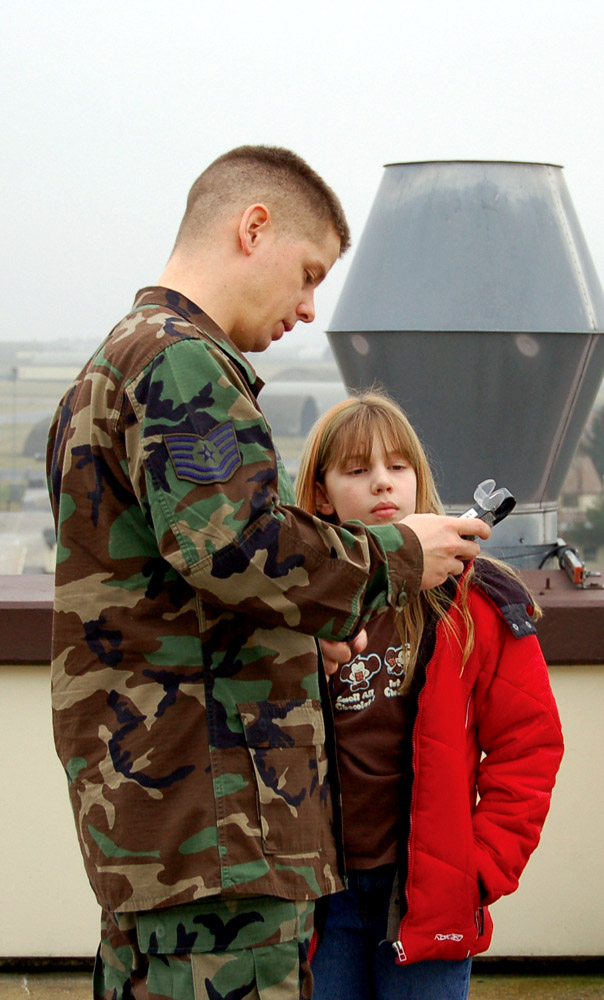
National Job Shadow Day

Tech. Sgt. Donald Odom explains to his daughter Mackenzie how take wind speed, temperature and dew point readings using a kestrel. Mackenzie spent National Job Shadow Day Feb. 2 with her father learning about his job. Sergeant Odom is a weather forecaster with the 52nd Operations Support Squadron at Spangdahlem Air Base, Germany.